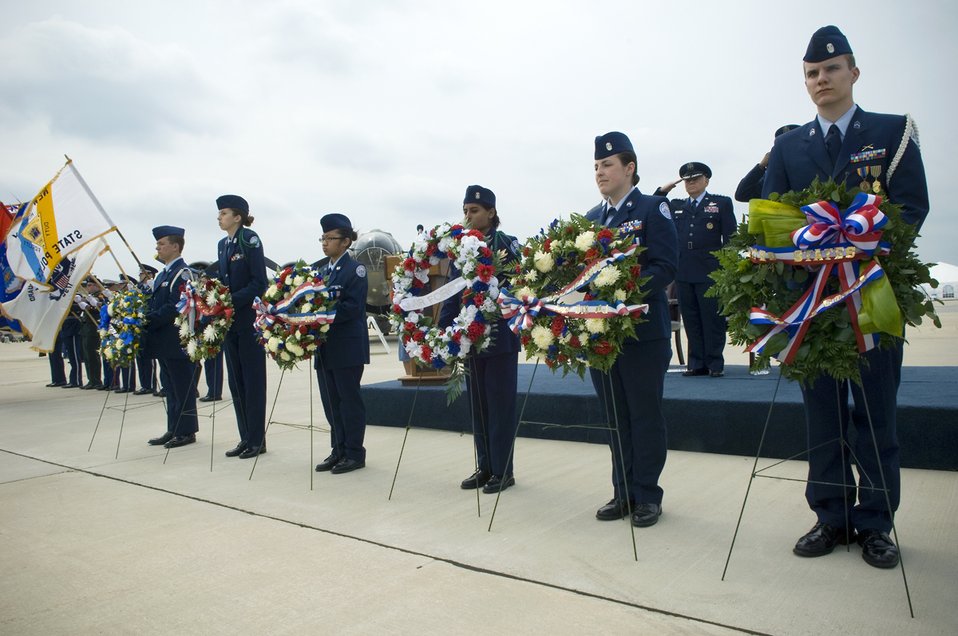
Wreath laying

Gen. Arthur J. Lichte salutes for the playing of